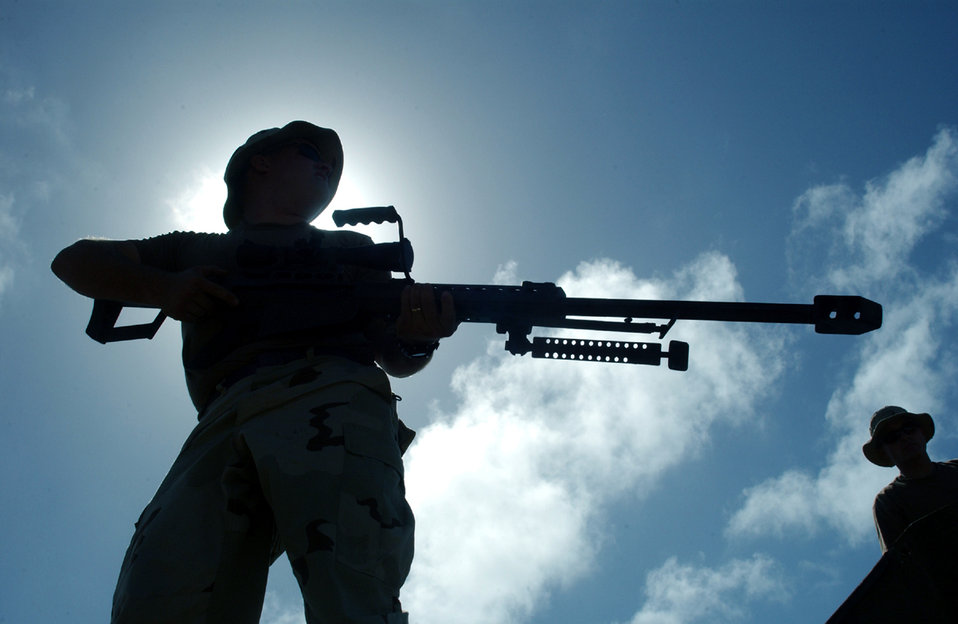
Making every second count

OPERATION ENDURING FREEDOM -- Senior Airman Phillip Dyer sets up a .50-caliber rifle for a live-fire training operation. Airman Dyer is an explosive ordnance disposal technician with the 40th Expeditionary Civil Engineer Flight at a forward-deployed location. He is deployed from Nellis Air Force Base, Nev.